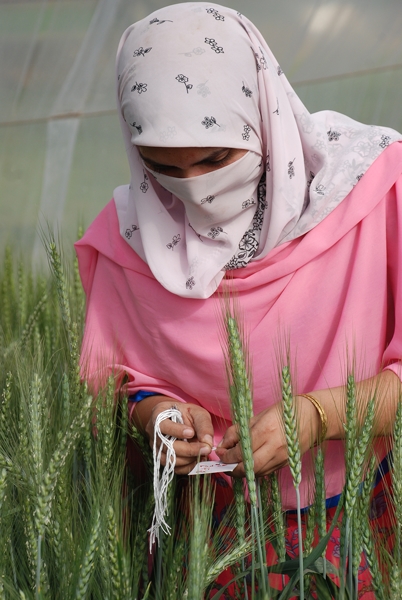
m DSC 0356